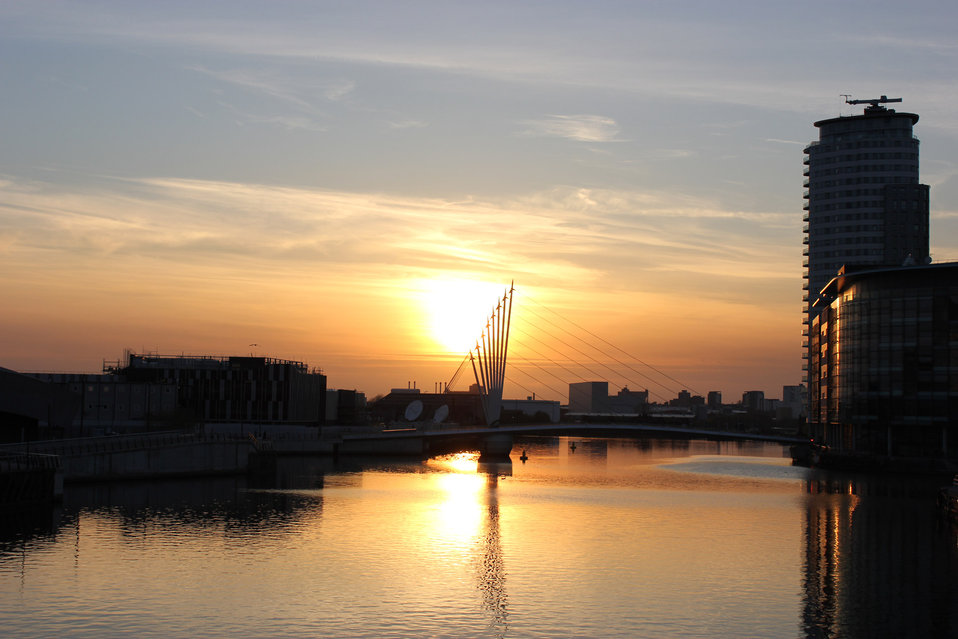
Sunset over media city salford.